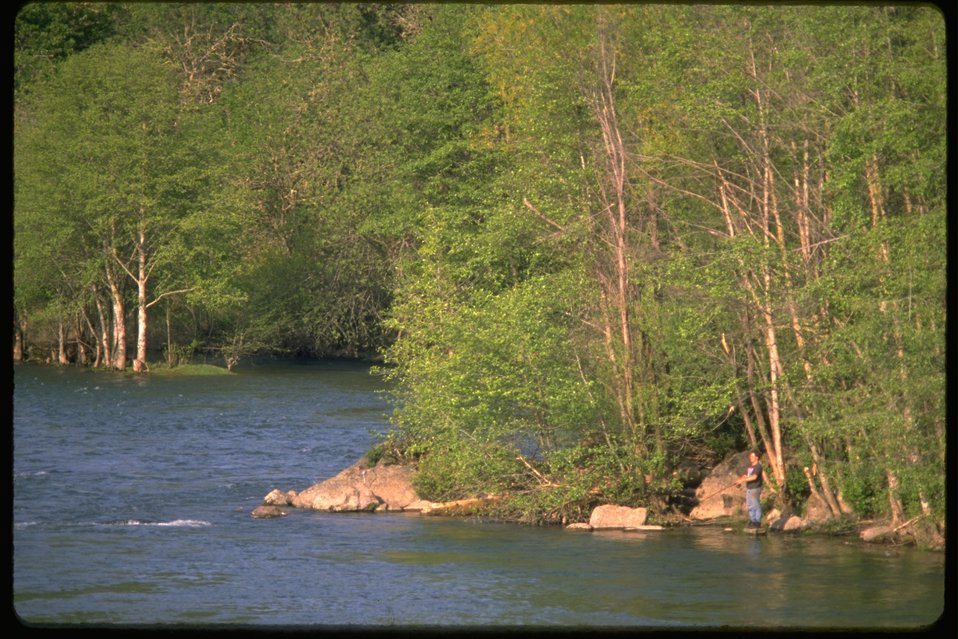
Fisherman at Shady Cove on the Rogue River.